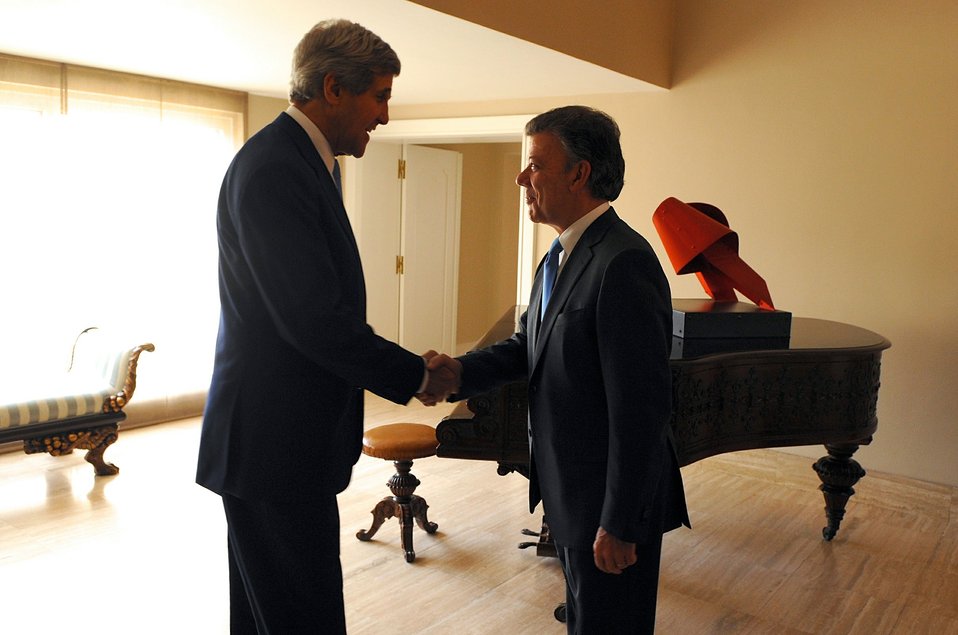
Secretary Kerry Meets With Colombian President Santos

U.S. Secretary of State John Kerry stands with Colombian President Juan Manuel Santos before their meeting at Casa de Narino in Bogota, Colombia, on August 12, 2013.